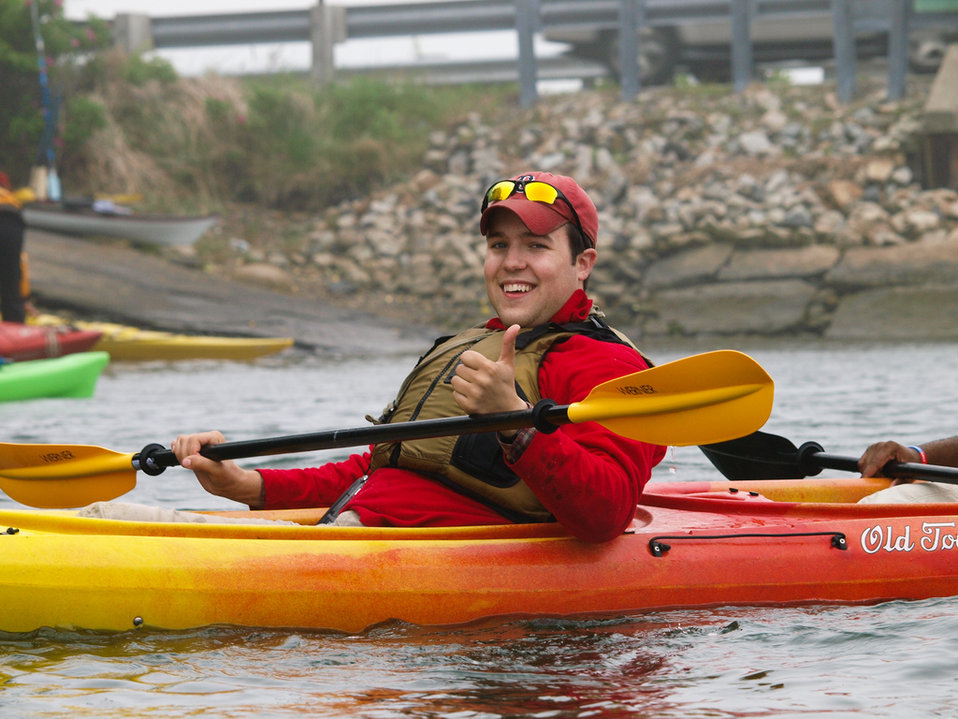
Jamie Weliver - 2010 Annual CIP kayaking trip

U.S. Fish and Wildlife Service